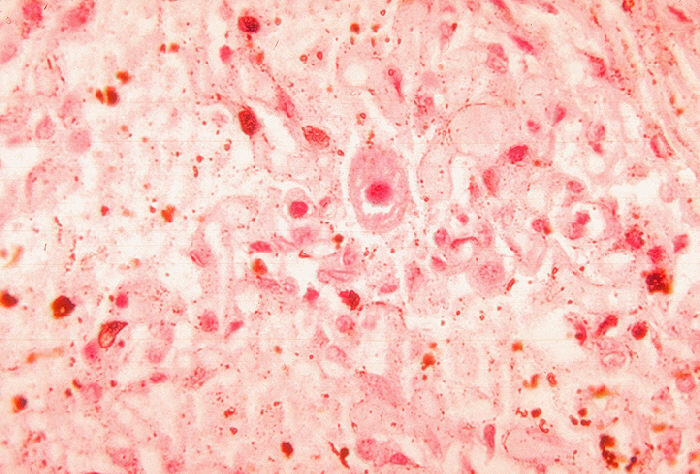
Histopathology of cytomegalovirus infection of lung.